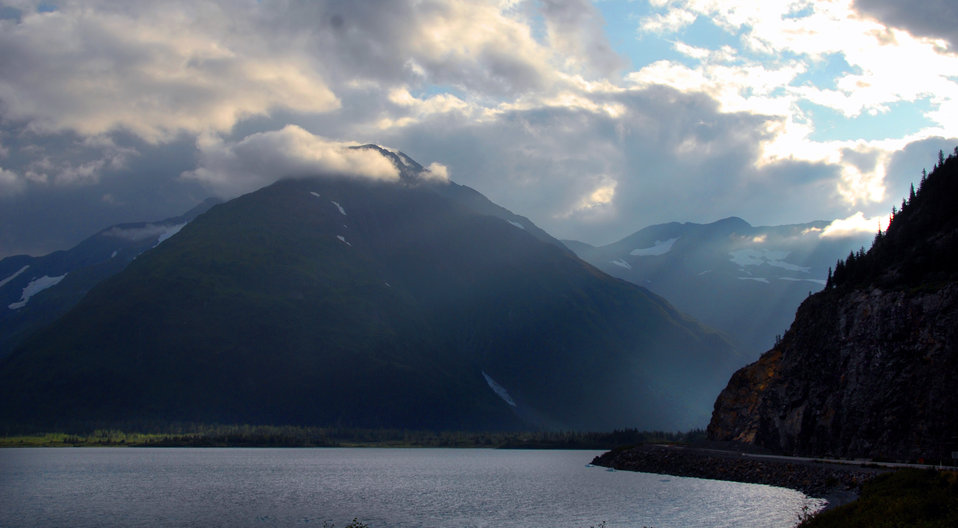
Rural Tour 0081